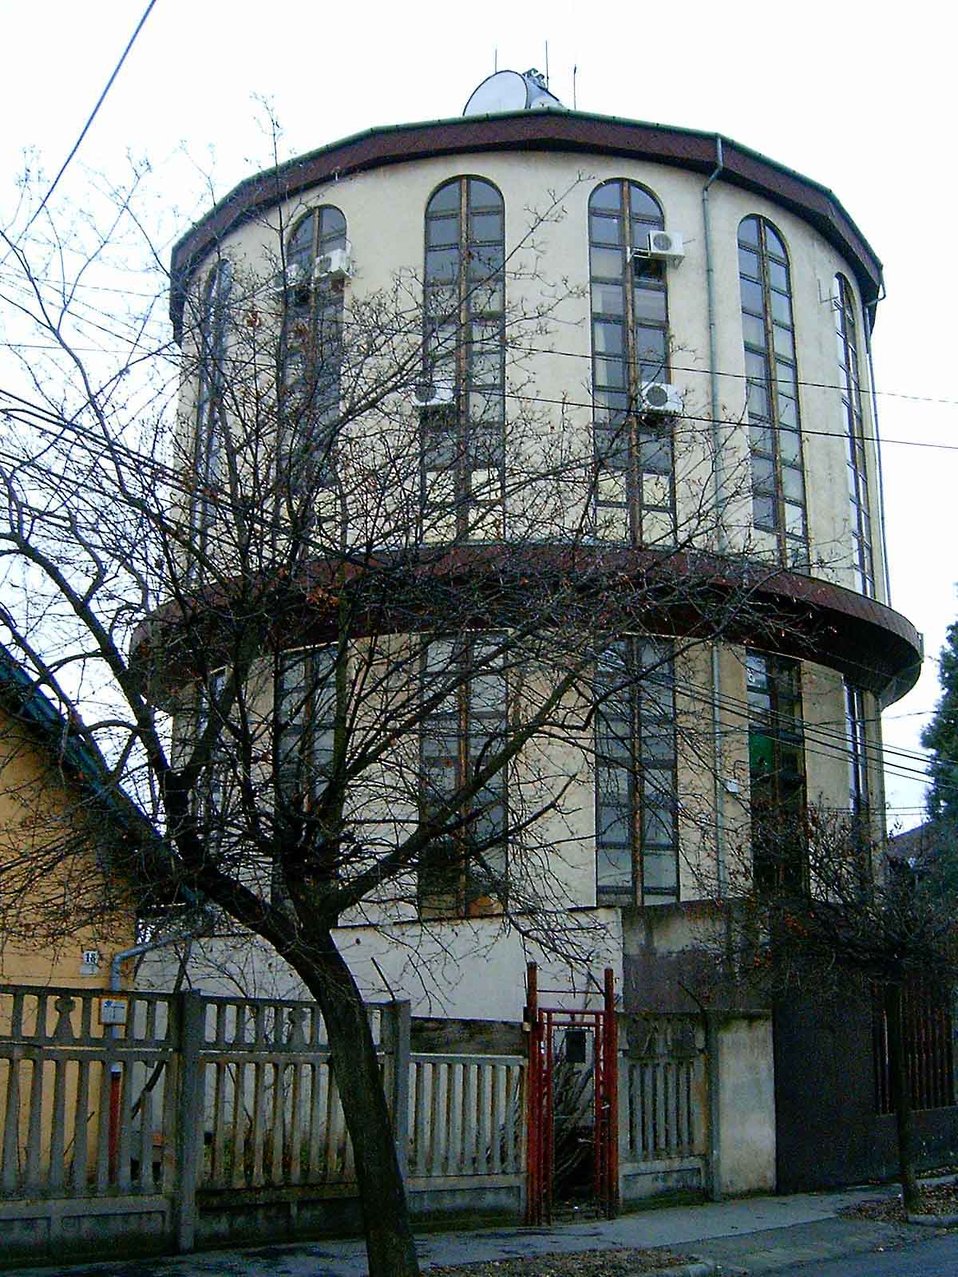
Magyar: Kispesti víztorony Deutsch: Wasserturm Kispest (18. Bezirk in Budapest) Watertower in Kispest (18th district in Budapest)